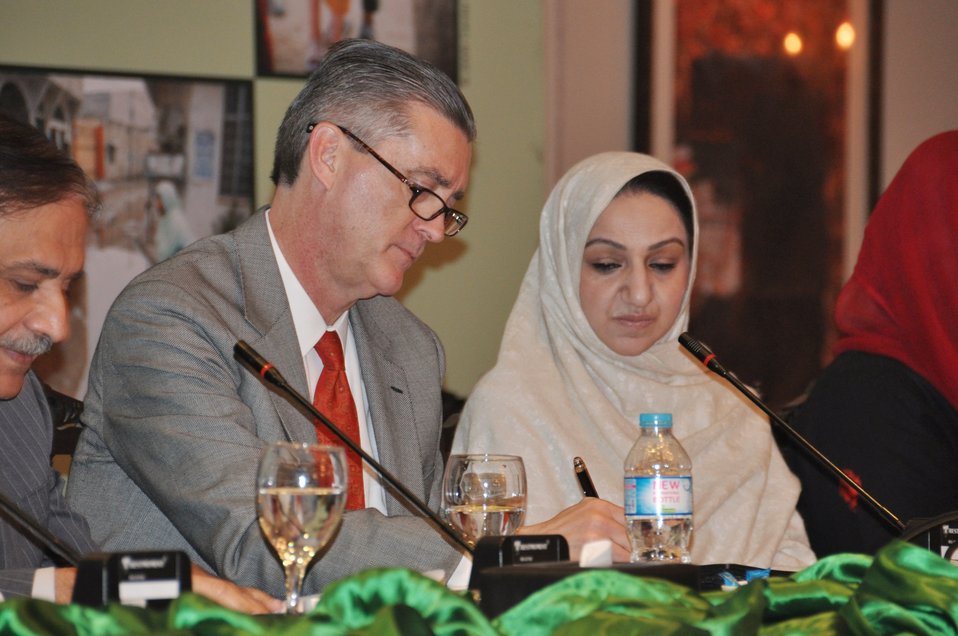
PDHS Launch

Speaking at the occasion, Ambassador Olson commented, “The rich data and findings from this robust survey will help the Government of Pakistan, provincial leaders, health officials, and development partners shape programs and policies to help improve the health of the Pakistani people.”